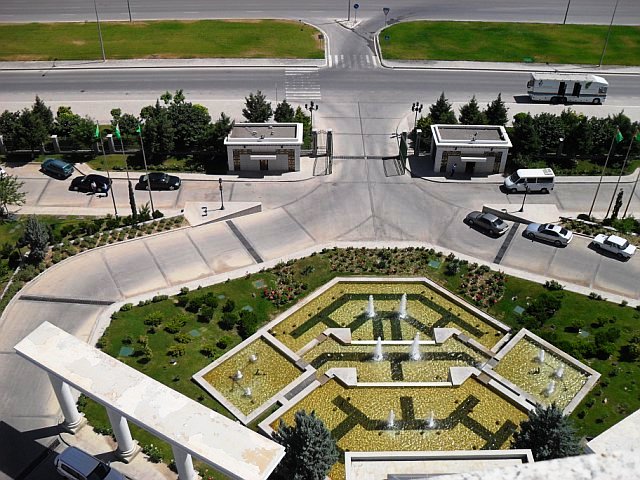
SCA Special Assistant Morgan Takes a Photo of Ashgabat, Turkmenistan

Rebecca S. Morgan, Special Assistant for the Bureau of South and Central Asian Affairs, takes a photo of Ashgabat, Turkmenistan, on June 14-16, 2010.